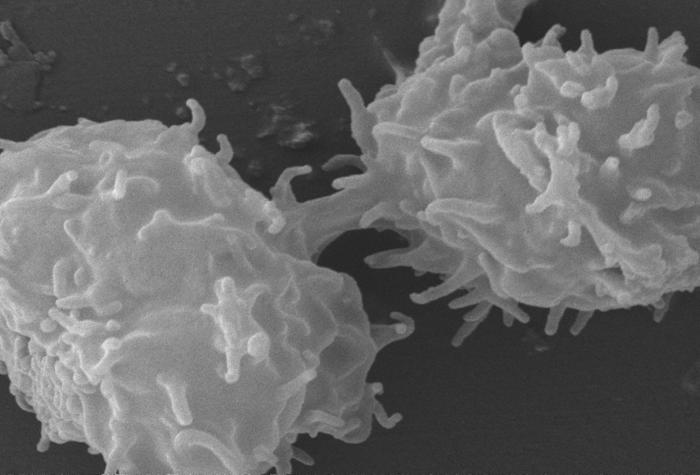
This scanning electron micrograph (SEM) revealed two Acanthamoeba polyphaga protozoa, as they were interacting through their numerous projecting pseudopodia, from the Latin pseudo = false, and podia = feet, extending from the surface of these organisms. These pseudopodia enable the amoebae to move about, and grasp objects in their environment.